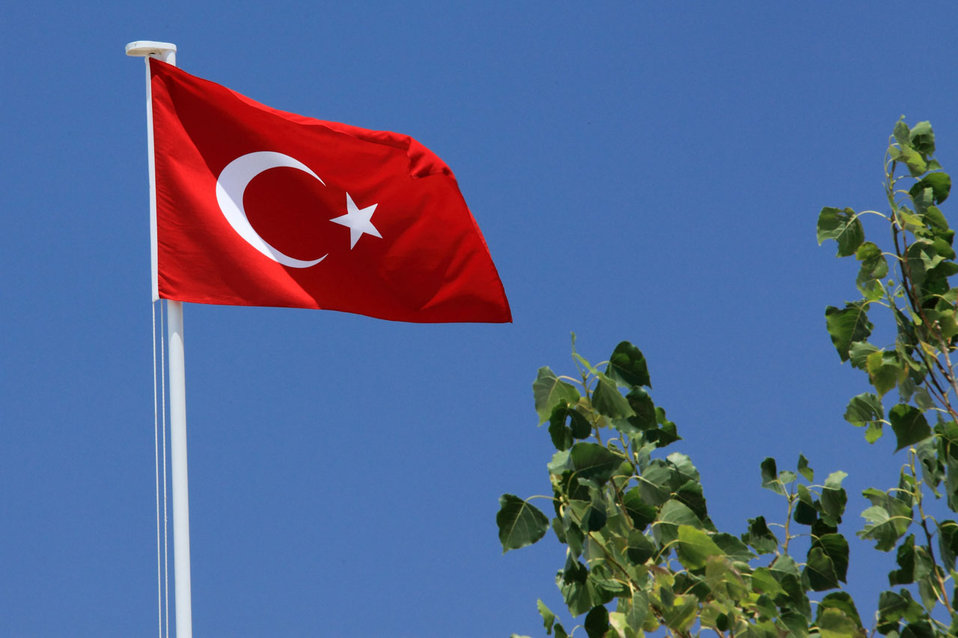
Turkish flag against blue sky with some green leaves in the foreground.